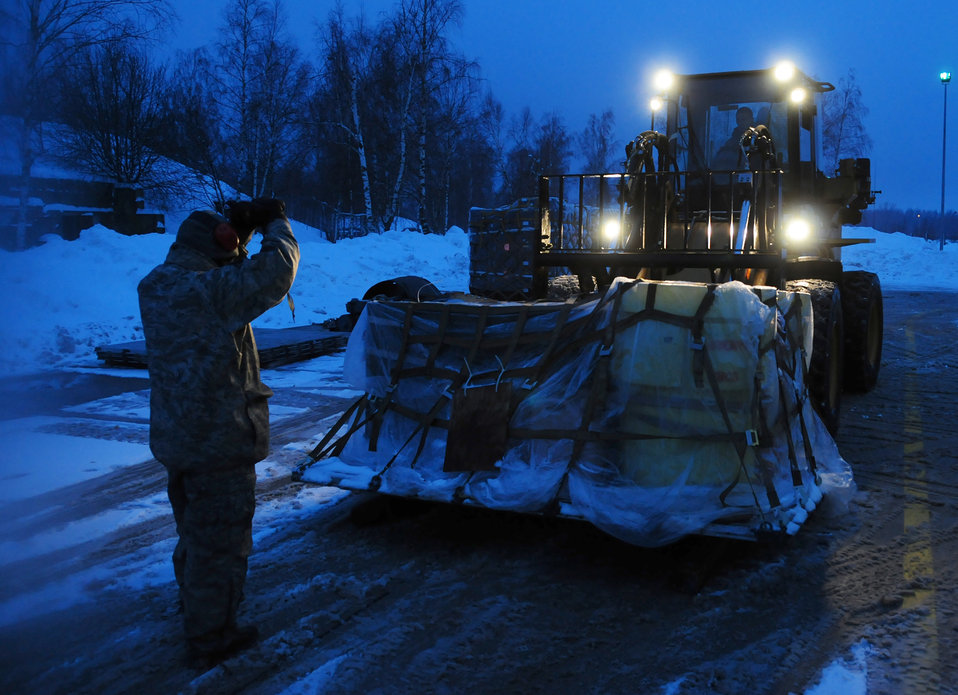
Take it up!

Tech. Sgt. Carlos Cardenas guides a forklift being driven by Senior Airman Scott Knight Jan. 7, 2011, at Lithuania Air Force Air Base in Lithuania. Sergeant Cardenas and Airman Knight are assigned to the 493rd Expeditionary Fighter Squadron Redeployment Action Team at Royal Air Force Lakenheath, England.